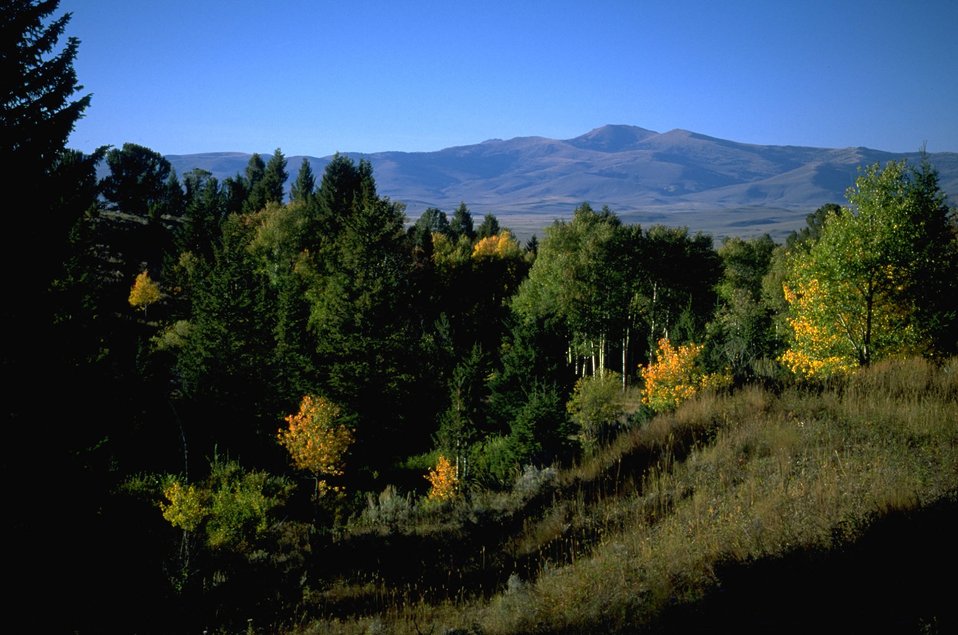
Aspen and other trees in Centennial Mountains overlooking Centennial Valley